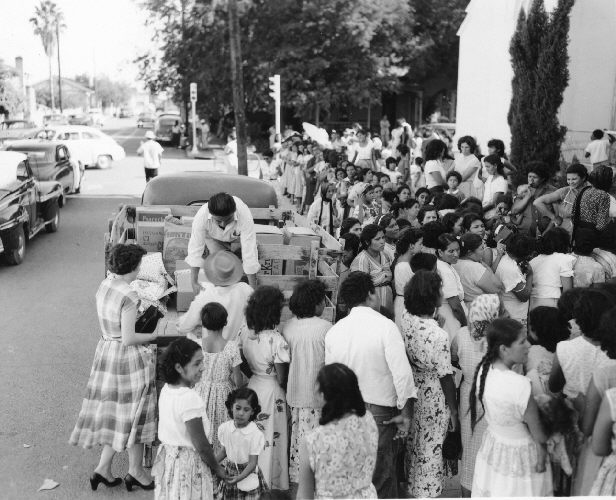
Disaster aid for people of Laredo, Texas.